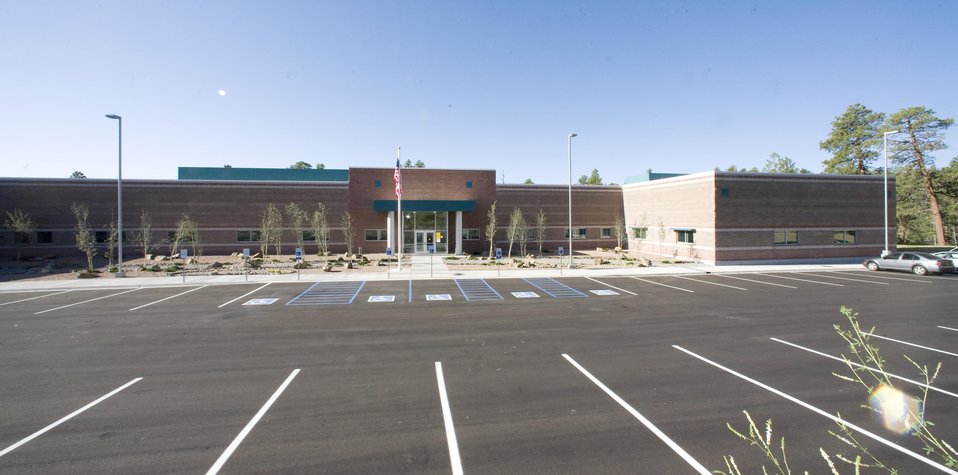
Los Alamos Site office building, November 2011.